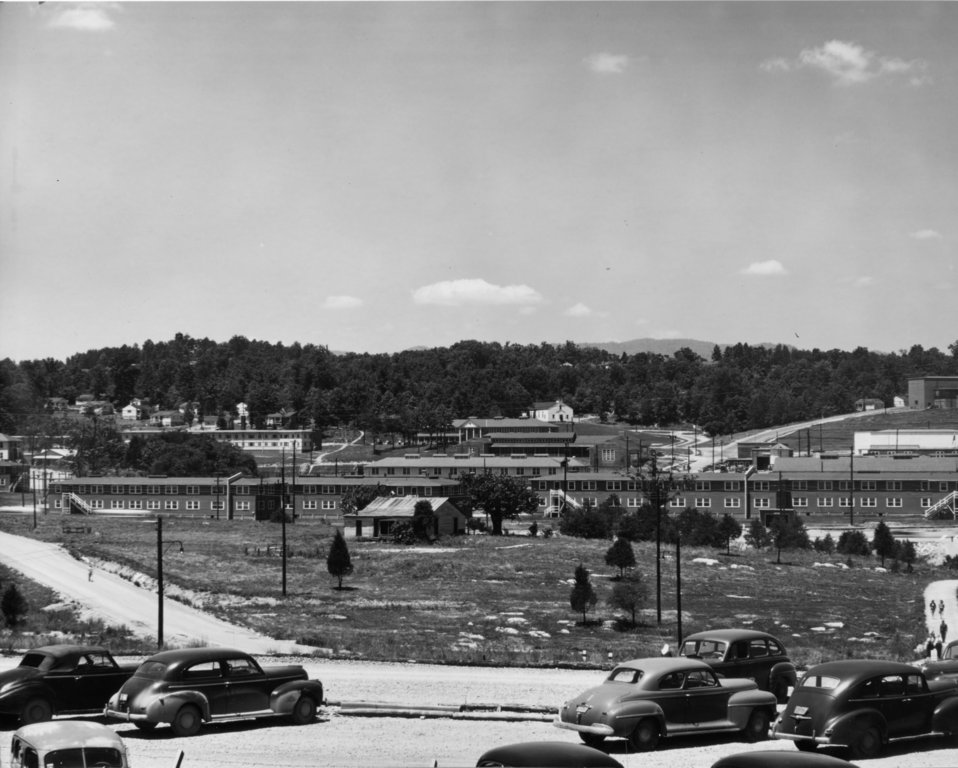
Schools at Oak Ridge